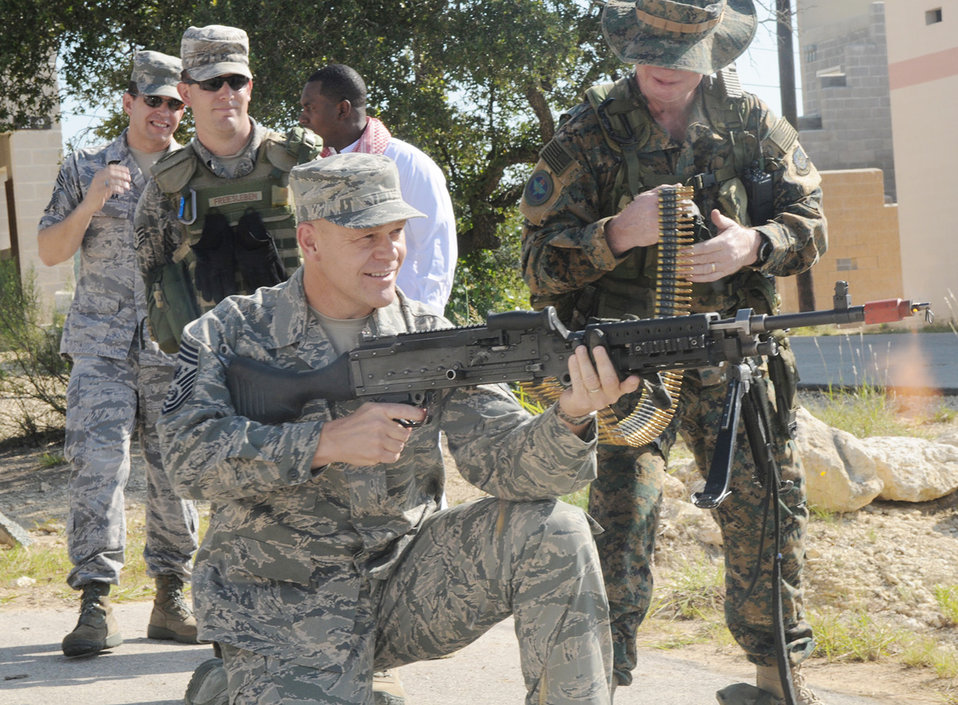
CMSAF discusses force priorities, continued support for families and wounded warriors

Chief Master Sergeant of the Air Force James A. Roy fires an M240B medium machine gun during his visit to Movement Over Urban Terrain training for security forces technical school students July 9 at Lackland Air Force Base, Texas.